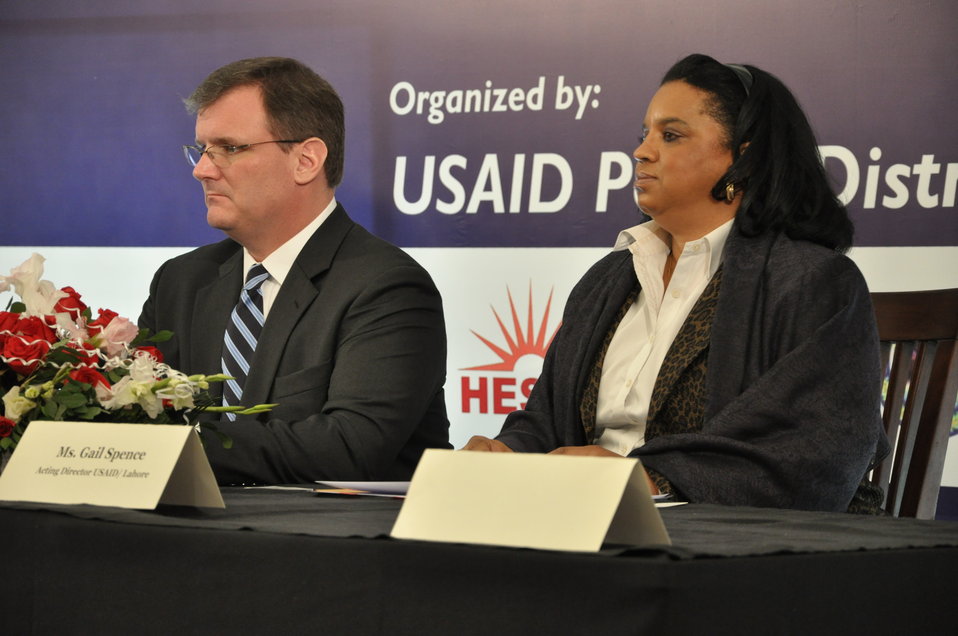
COP (PDIP and Gail Spence (Deputy Director USAID Punjab)